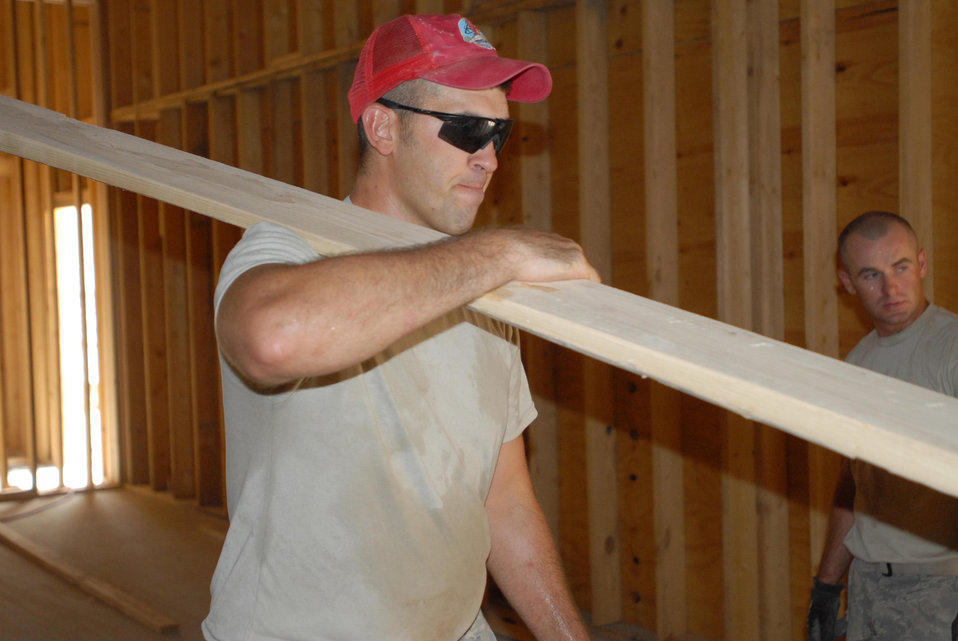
Airmen improve base in Iraq

Staff Sgt. Jeffrey Ratliff helps build a new hall for the Red Bull Band in June at Contingency Operating Base Basra, Iraq. Sergeant Ratliff is assigned to the 557th Expeditionary RED HORSE Squadron.